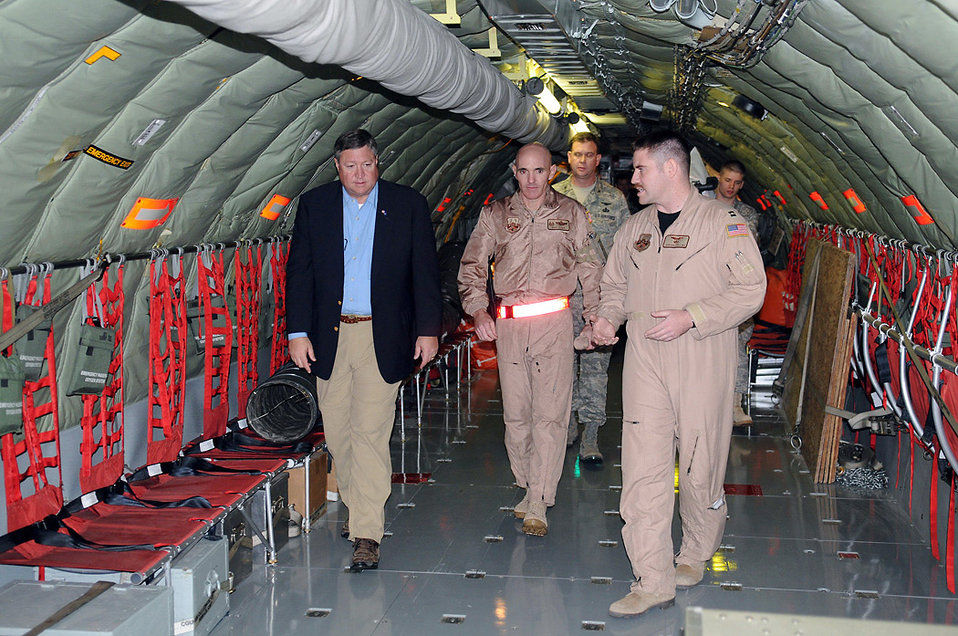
Air Force secretary visits Manas Airmen

Capt. Jordan Collins (right) briefs Secretary of the Air Force Michael B. Donley about new capabilities on the KC-135 Stratotanker Oct. 15 at Manas Air Base, Kyrgyzstan. While at Manas AB, the secretary toured the base and held an Airmen's call to share the latest Air Force issues and priorities. Captain Collins is assigned to the 376th Expeditionary Operations Group.